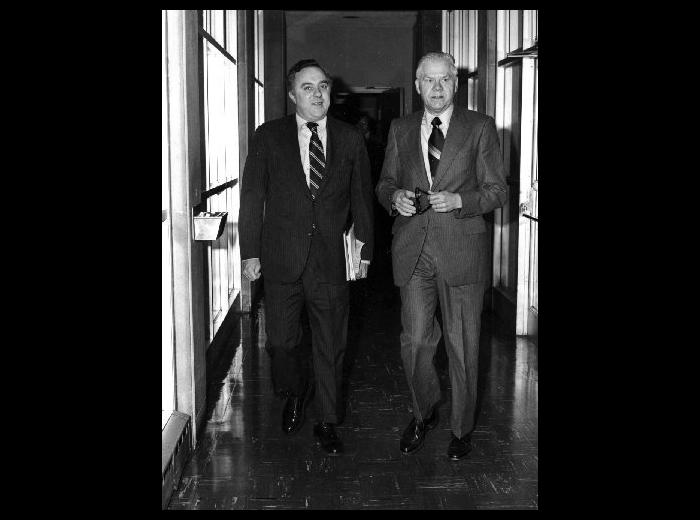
DHEW Secretary, Joseph A. Califano, visits CDC.